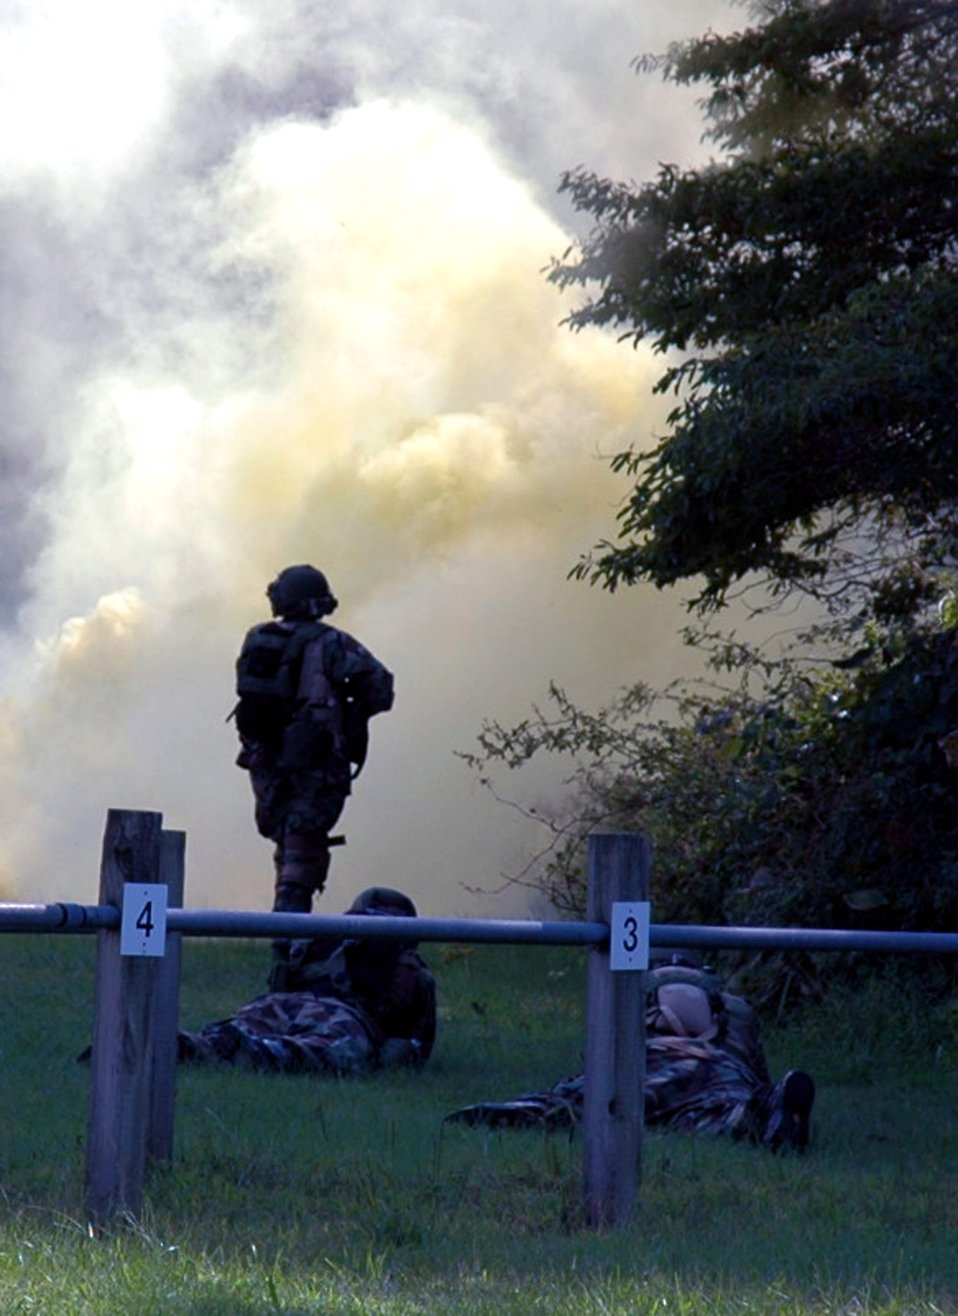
Contingency training sharpens combat skills

Students in the Air Mobility Warfare Center's Advanced Contingency Skills Training Course 06-5 at Fort Dix, N.J., practice combat patrolling during a training session at a tactical range there Sept. 18. More than 60 Airmen are participating in the training course, learning numerous combat-related skills including tactics, media skills, convoy operations, first aid, and field craft. The course is taught by the AMWC's 421st Combat Training Squadron.